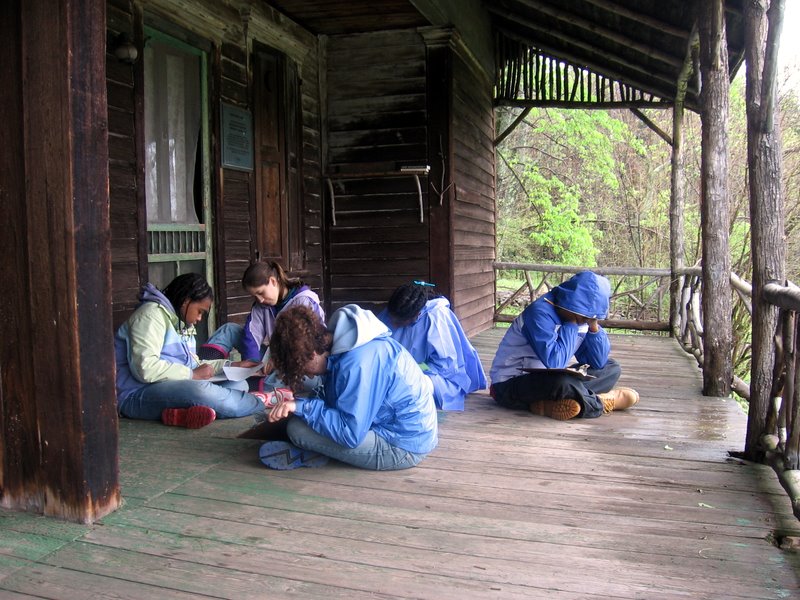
Uploaded by request of John McDaniel

Photo taken in Roxbury, NY

Students reading and writing on the porch of Woodchuck Lodge, the summer home of famed naturalist John Burroughs. 'People who know conserve, people who don't know don't care.'